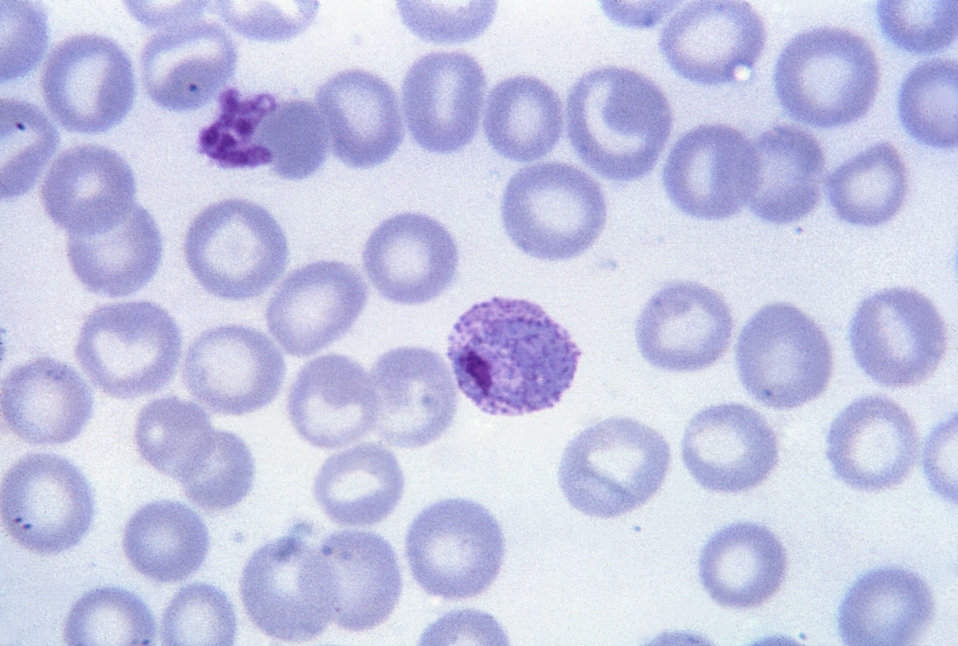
This thin film Giemsa stained micrograph reveals a mature Plasmodium vivax trophozoite.